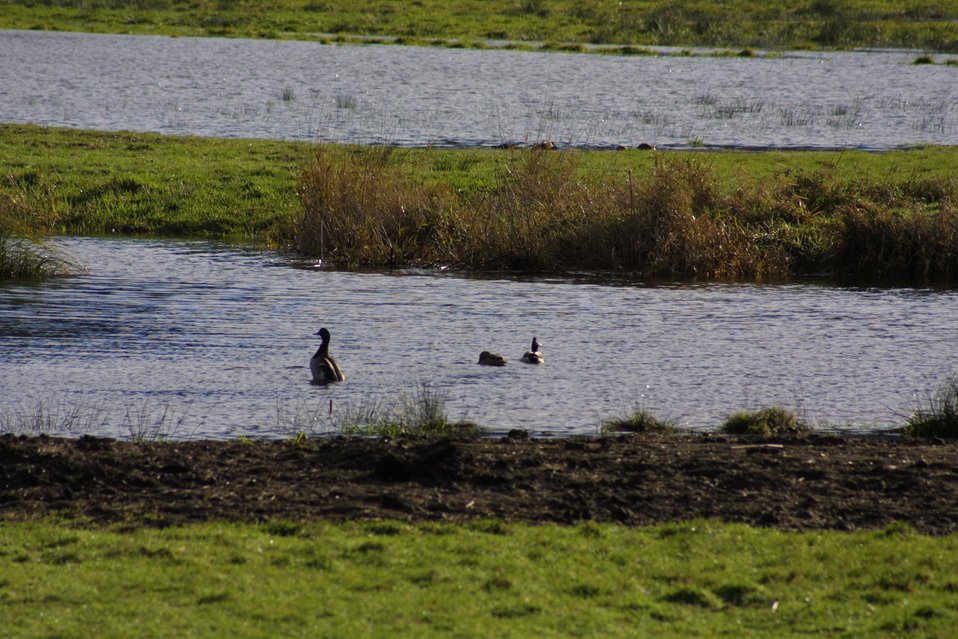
Wetlands at the Dean Creek Watchalbe Wildlife site near Reedsport, Oregon.